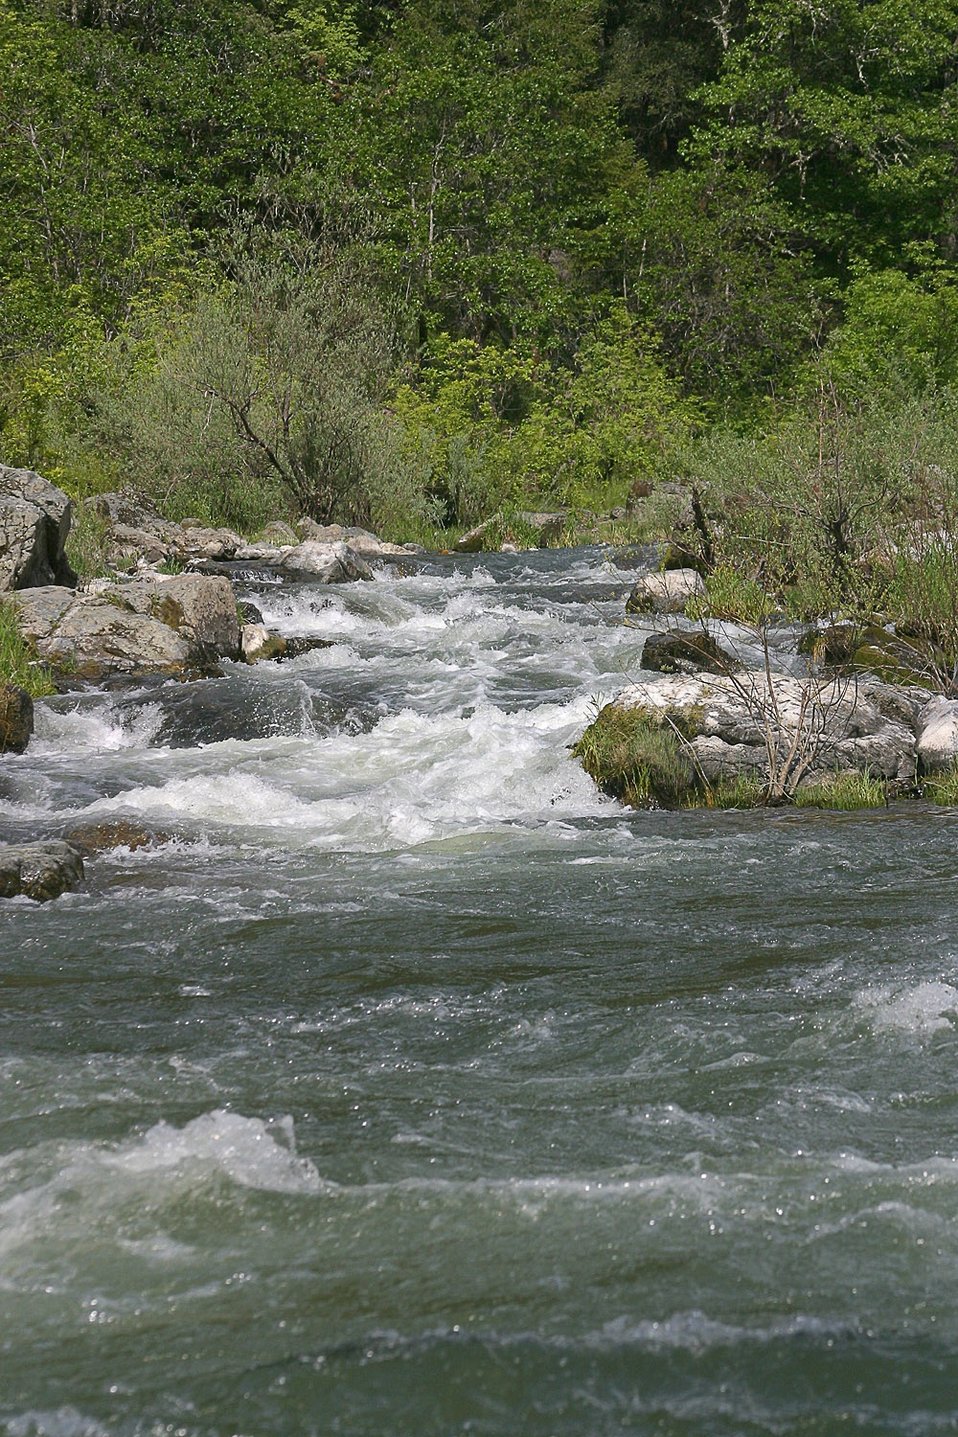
Rainie Falls on the Wild section of the Rogue River from Grave Creek to Foster Bar. 3100 cfs at Grants Pass and 5300 at Agness.